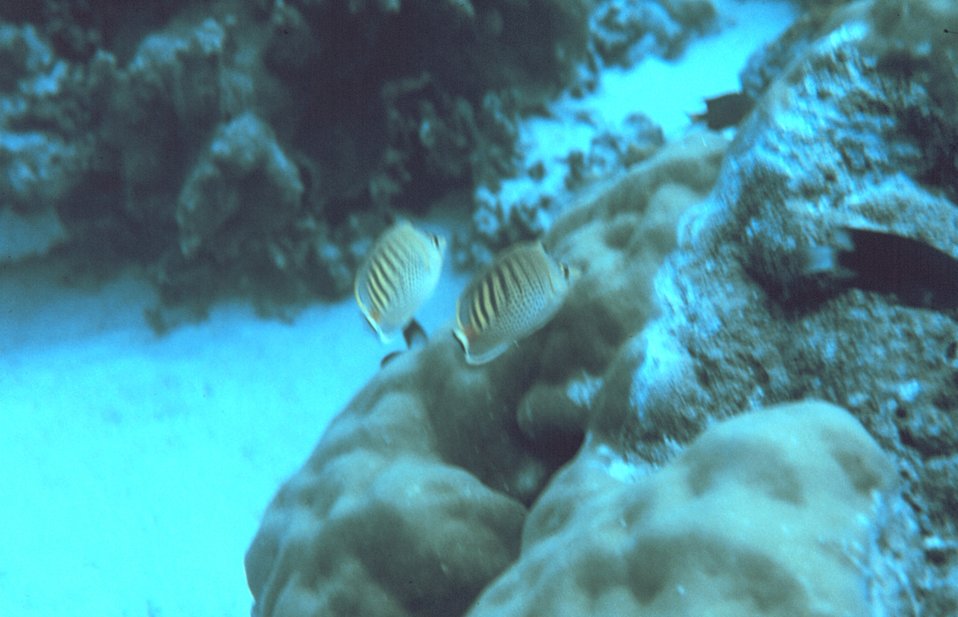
Reticulated butterflyfish (Chaetodon reticulatus). Mated pair grazing on biota associated with coral head